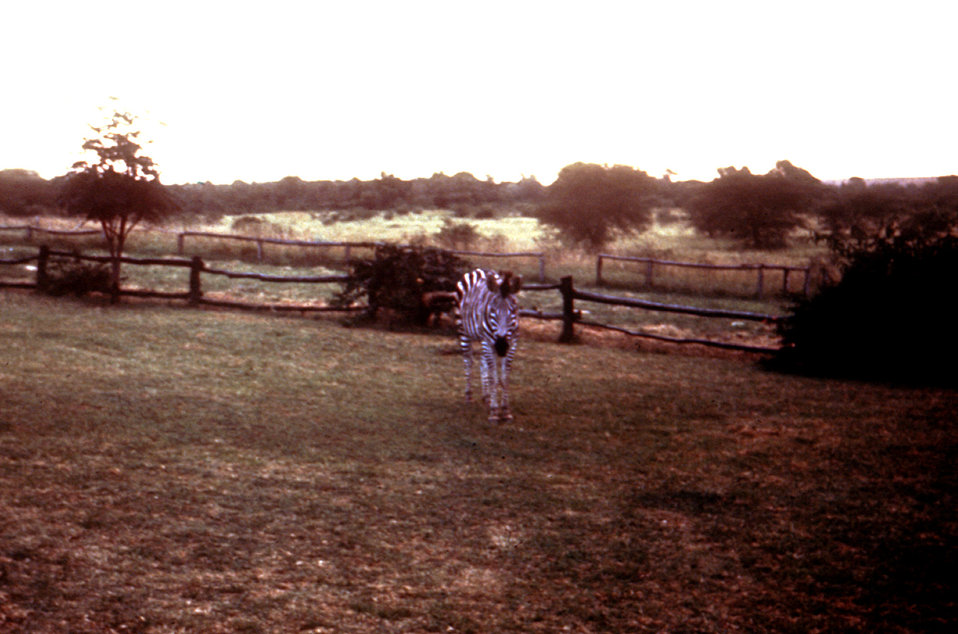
This zebra was photographed in a Zimbabwe game park, was taken by 2 travelers days before exhibiting signs of Marburg disease.